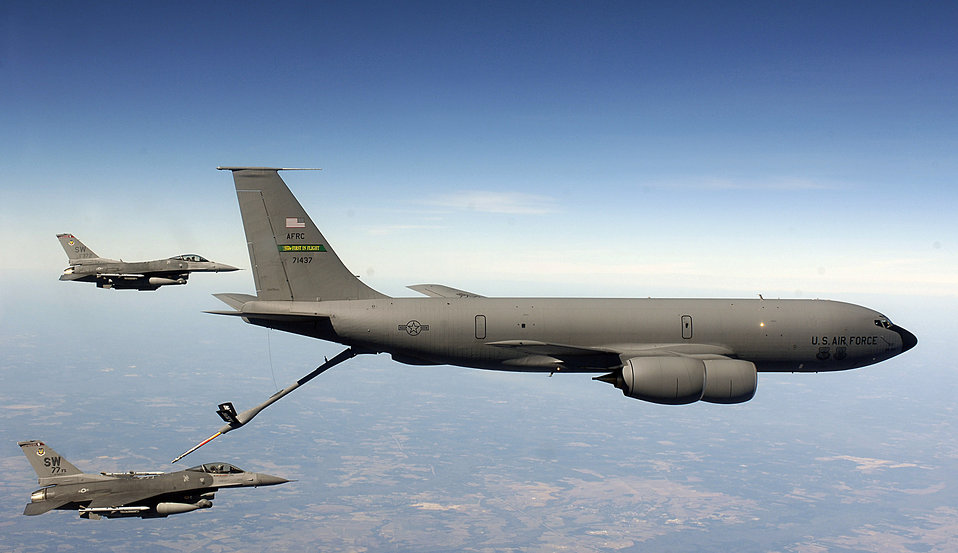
Exercise Iron Thunder

77th Fighter Squadron F-16 Fighting Falcons receive fuel from a KC-135 Stratotanker Feb. 7 near Shaw Air Force Base, S.C. during Exercise Iron Thunder, a multi-service, multi-national large force exercise with more than 100 aircraft participating. The stratotanker is from the Air Force Reserve's 916th Air Refueling Wing.